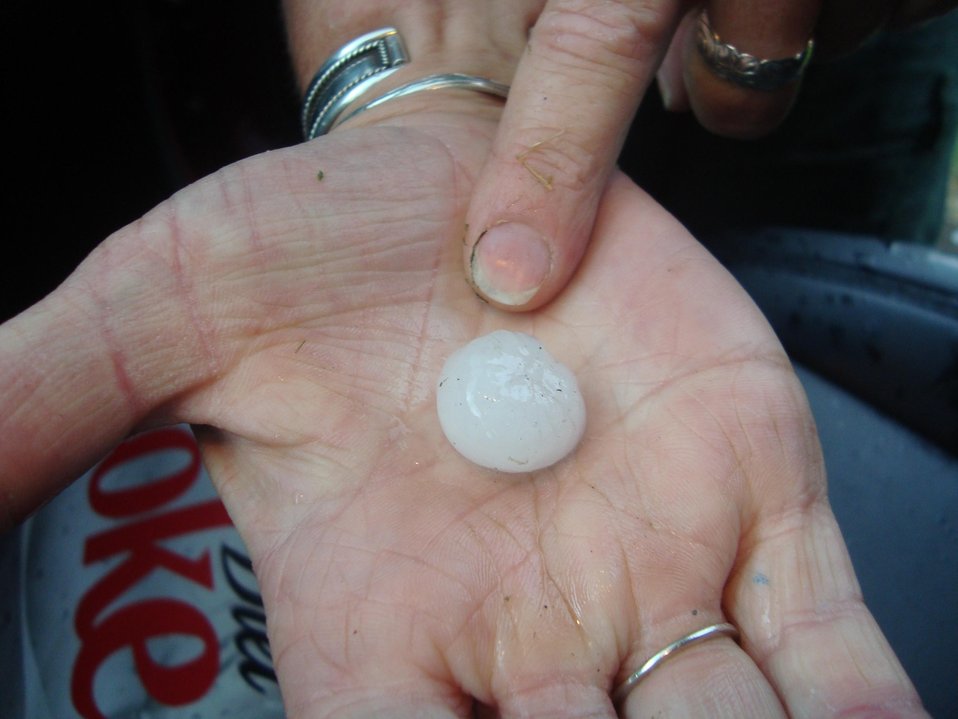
Dime size hail fell from a localized thunderstorm at the Days Creek Post Office at the Whiskey Complex Fire. The Whiskey Complex Fire in the Umpqua National Forest near Tiller, OR began by lightning on Jul. 26, 2013 by lighting has consumed approximately 11,260 acres.